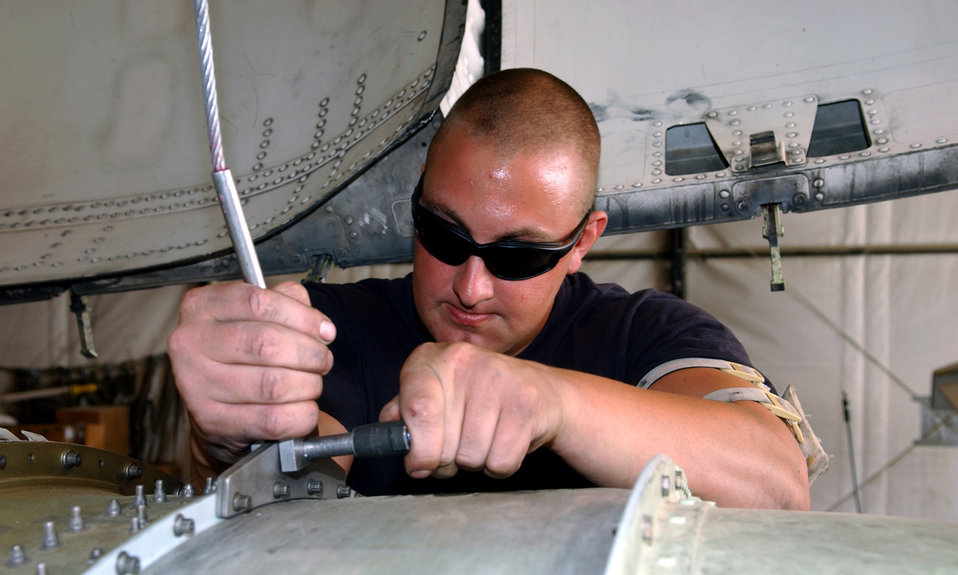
Ready for hoisting

BAGRAM AIR BASE, Afghanistan -- Staff Sgt. James Manix connects an A-10 Thunderbolt II engine to a hoist cable before removing it. Sergeant Manix is assigned to the 354th Expeditionary Aircraft Maintenance Squadron.